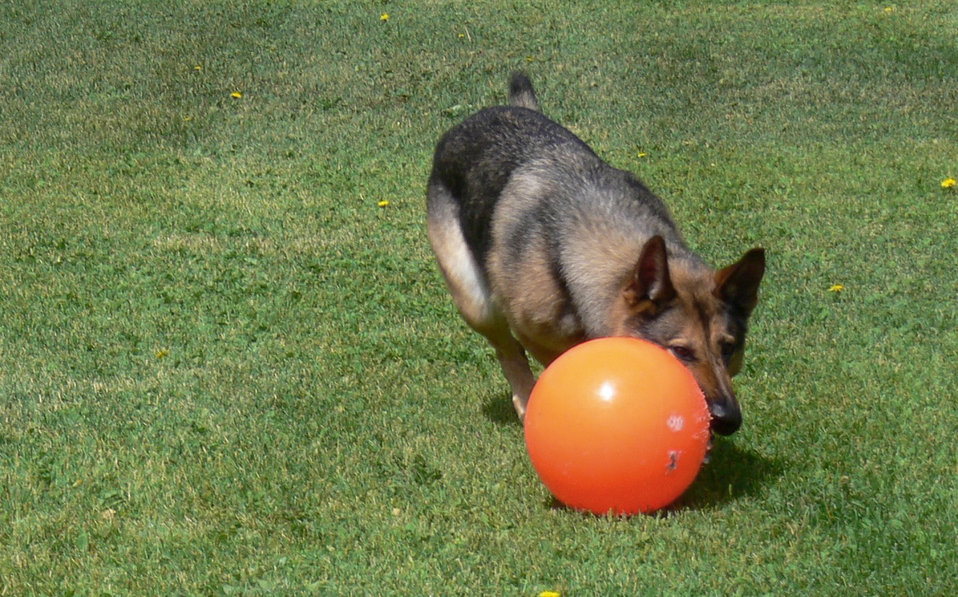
MWD recovers from PTSD

Four-year-old Gina plays during her off-duty hours July 21, 2010, at the dog kennel at Peterson Air Force Base, Colo. Gina served her first tour in Southwest Asia earlier this year and suffered from post traumatic stress disorder. Gina is a 21st Security Forces Squadron military working dog.